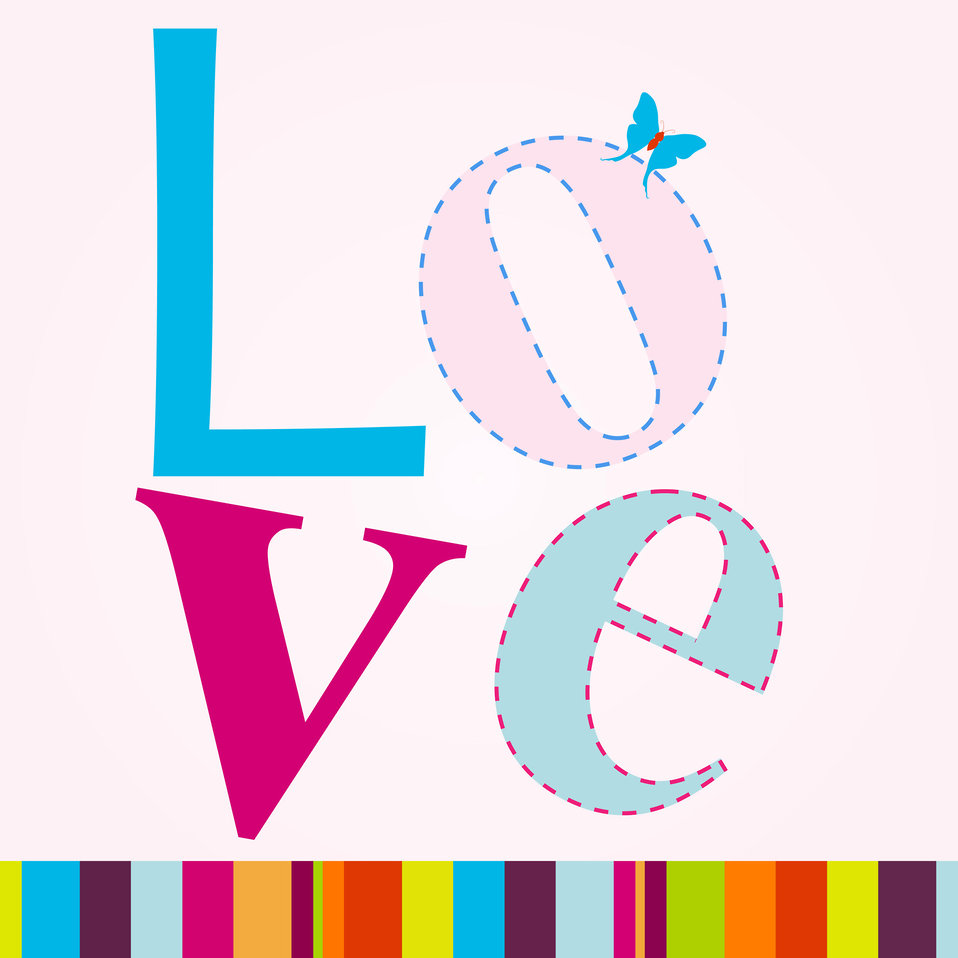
Love background

Love text background for scrapbooking.